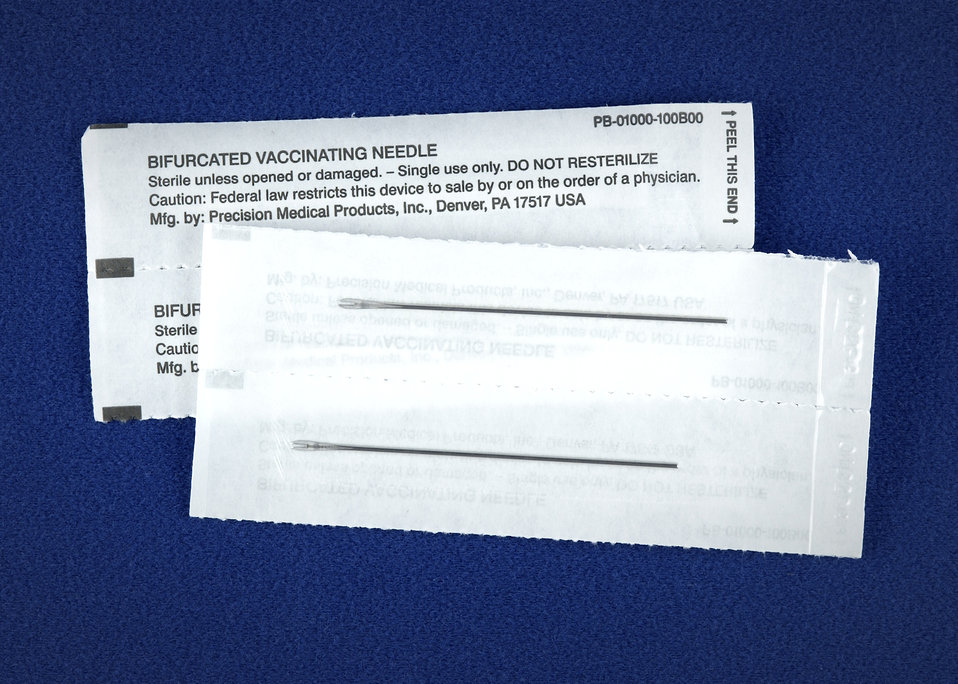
Sterile packaging of bifurcated needles used to vaccinate individuals with the smallpox vaccine.